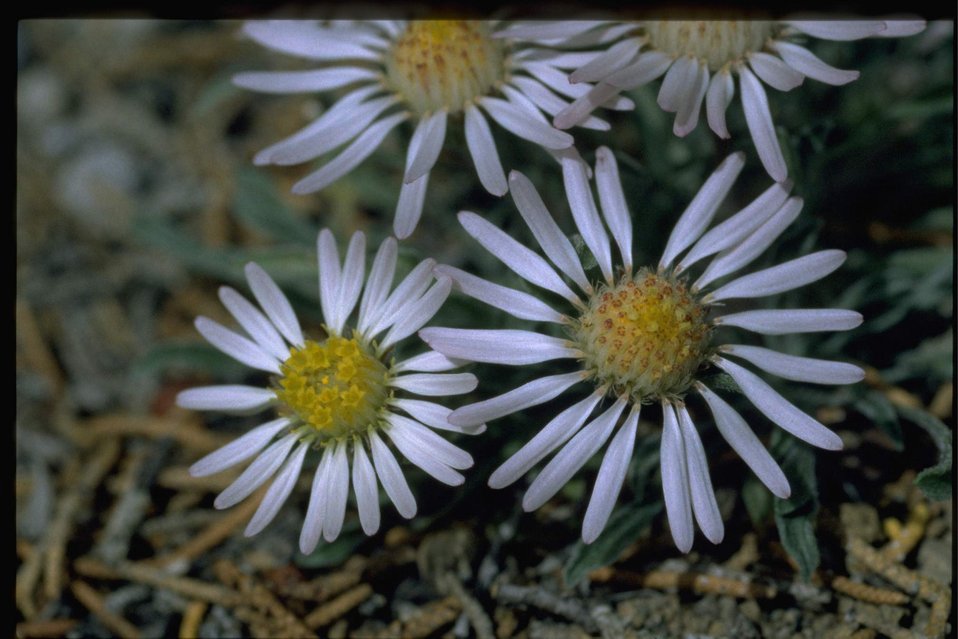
Medium shot of thread-leafed daisies.